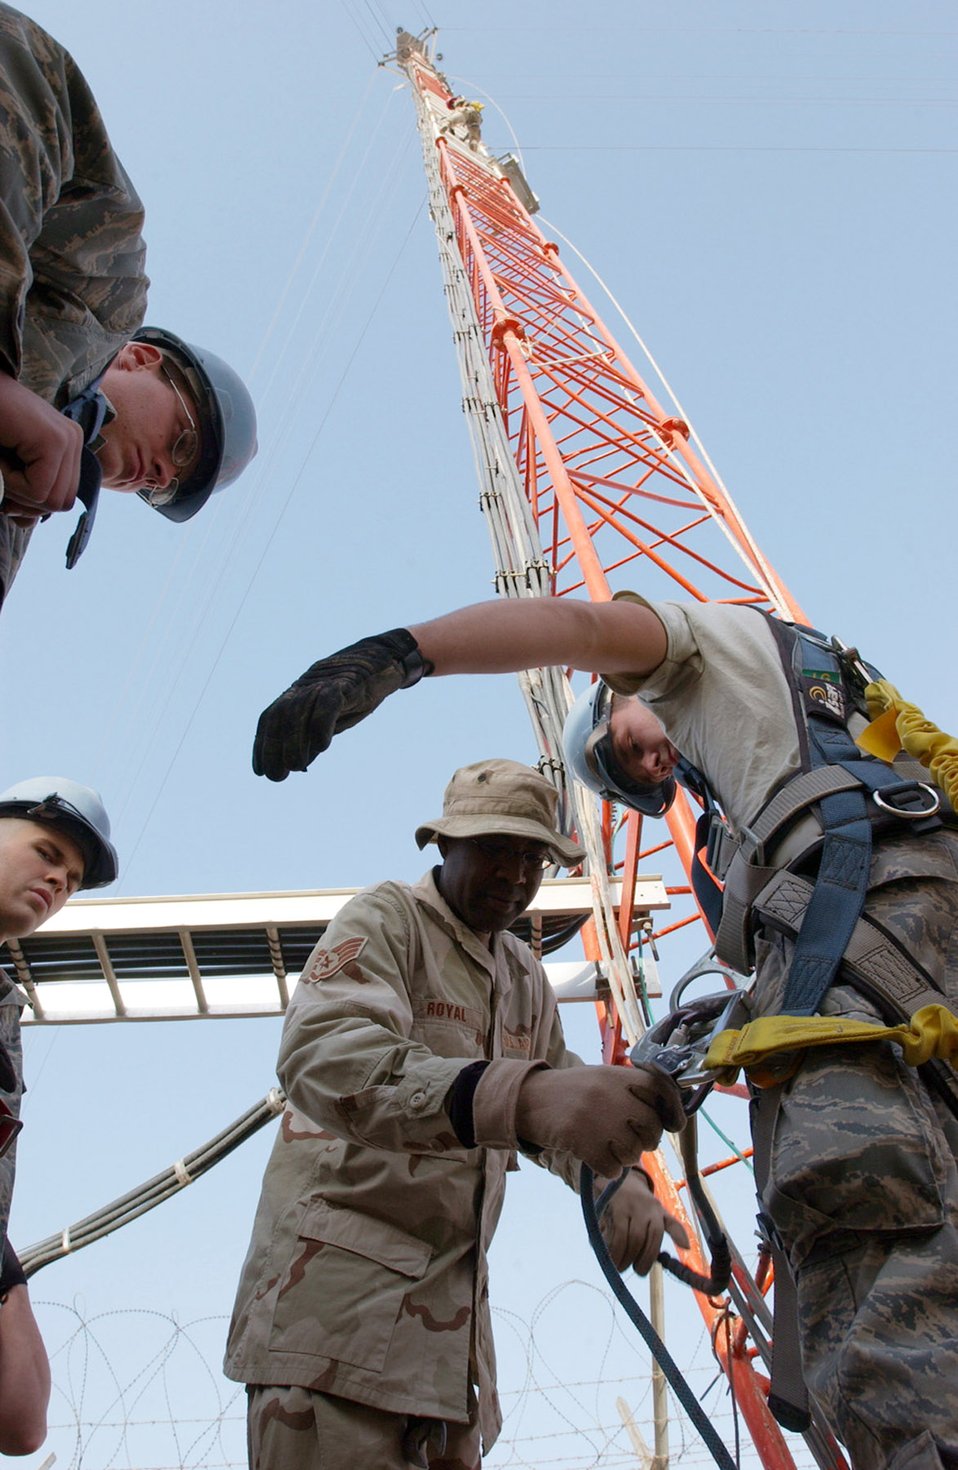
Tower-climbing certification

Staff Sgt. Frank Royal attaches a safety harness to Airman 1st Class William Klemmer Nov. 26. before he climbed the Radio-over-Internet Protocol Routed network tower at Ali Base, Iraq. Airmen from the 407th Expeditionary Communications Squadron took an opportunity to get tower-climbing certifications when a team arrived to do preventive maintenance on the RIPRnet. Sergeant Royal is deployed from Yokota Air Base, Japan, and Airman Klemmer is deployed from F. E. Warren Air Force Base, Wyo.